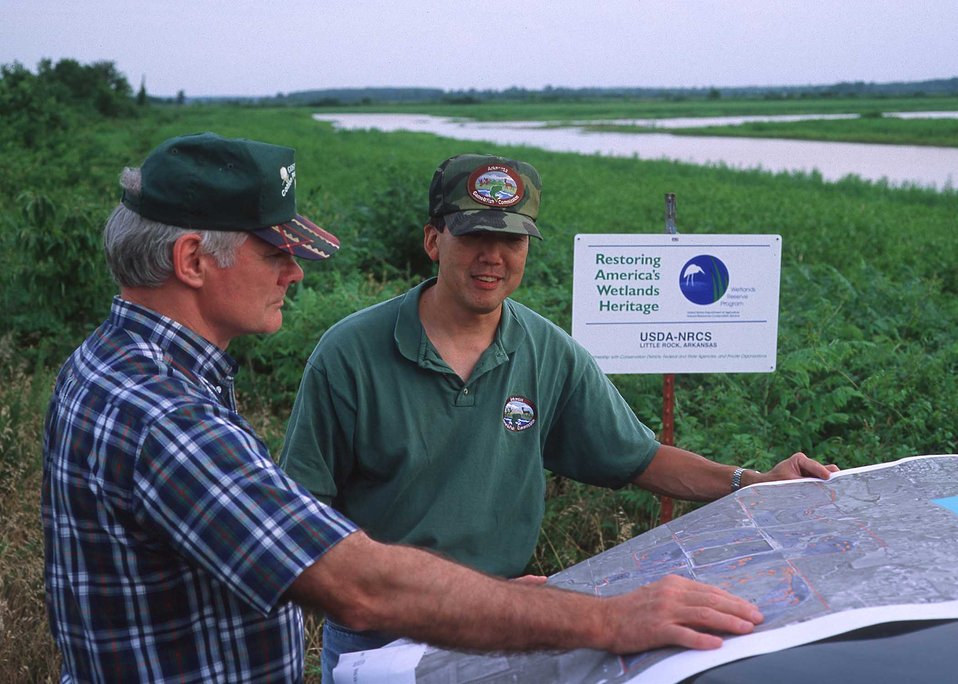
NRCS works with landowners to enhance and restore this wetland area in Arkansas.